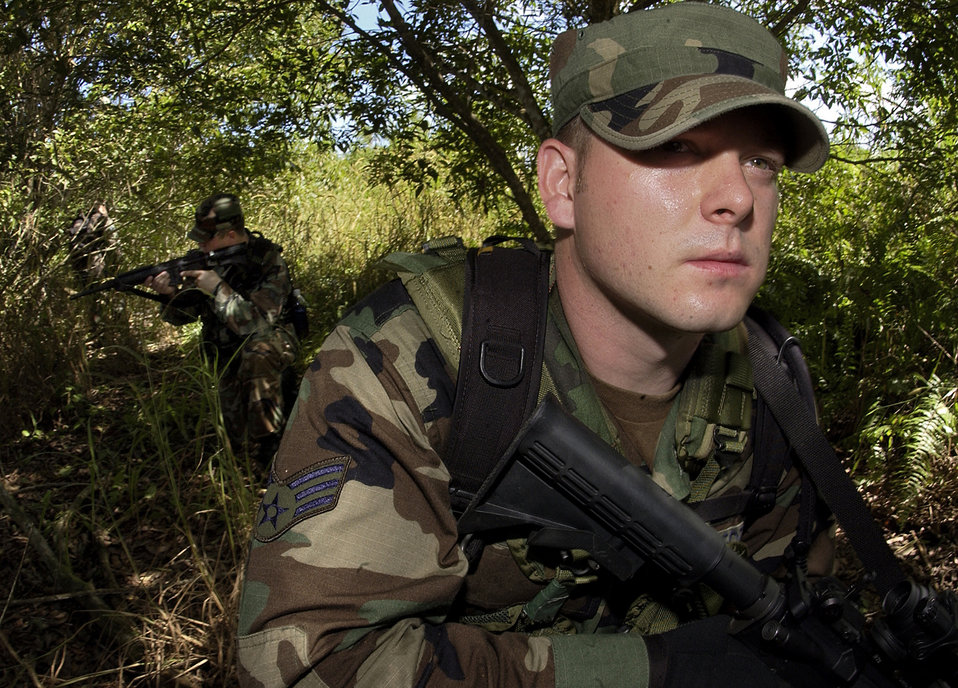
Through the jungle

ANDERSEN AIR FORCE BASE, Guam -- Senior Airman Rocky Thompsonl provides rear security for a tactical tracking team during a training mission Nov. 15. Security Forces Airmen with the 613th Contingency Response Group here are learning tactical tracking techniques from the Guam Police Department during a weeklong course through the jungles of Guam.